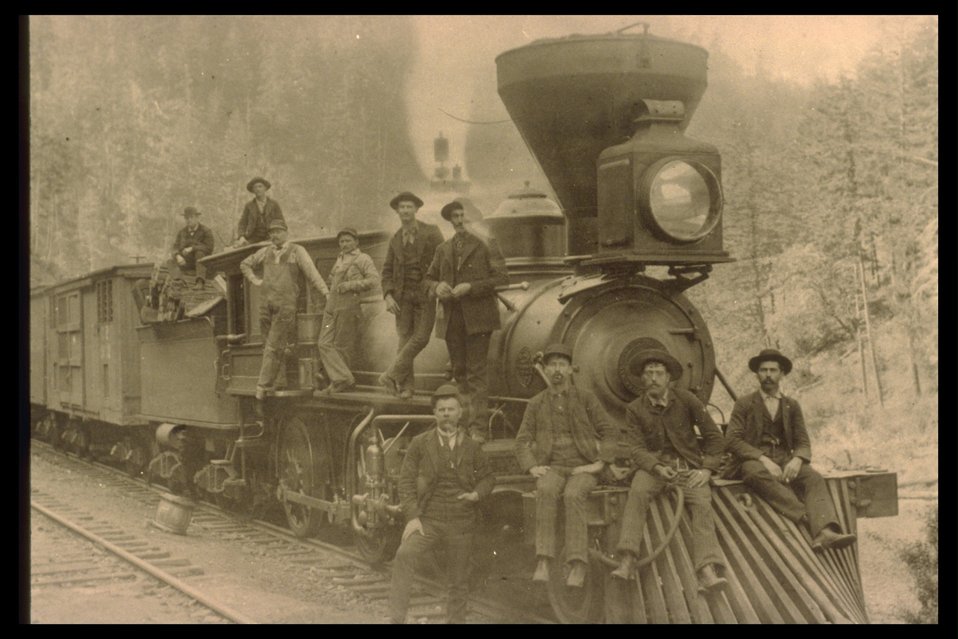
Black and White photo of a crew posing on an old train steam engine.